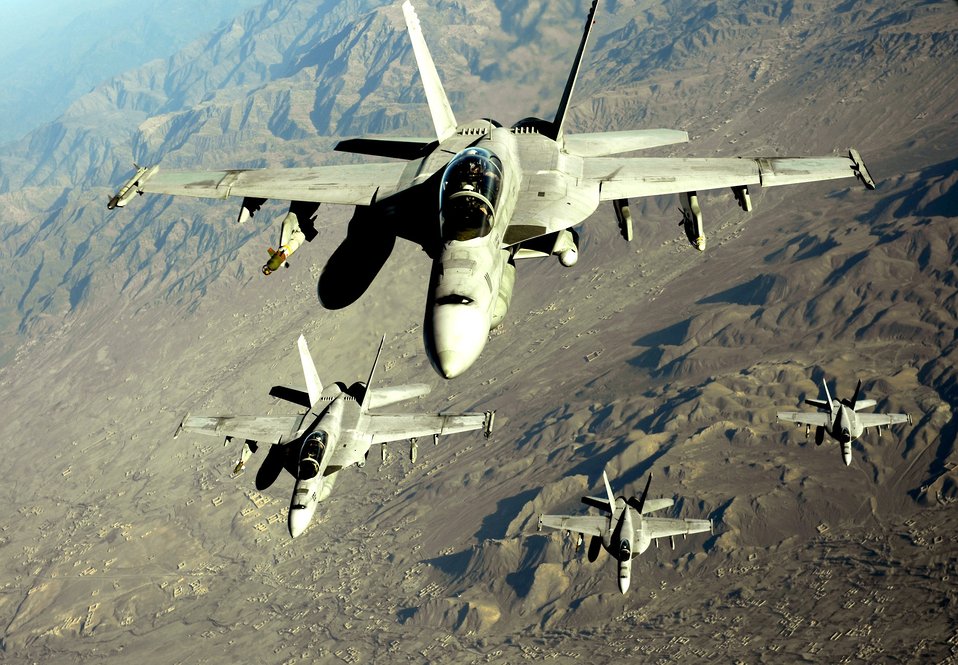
Refueling the joint fight

Four U.S. Navy F/A-18 Hornets approach a KC-10 Extender for refueling Nov. 25, 2010, over the mountains of Afghanistan. The KC-10 Extender is deployed with the 908th Expeditionary Air Refueling Squadron in support of operations Enduring Freedom and New Dawn at an air base in Southwest Asia.